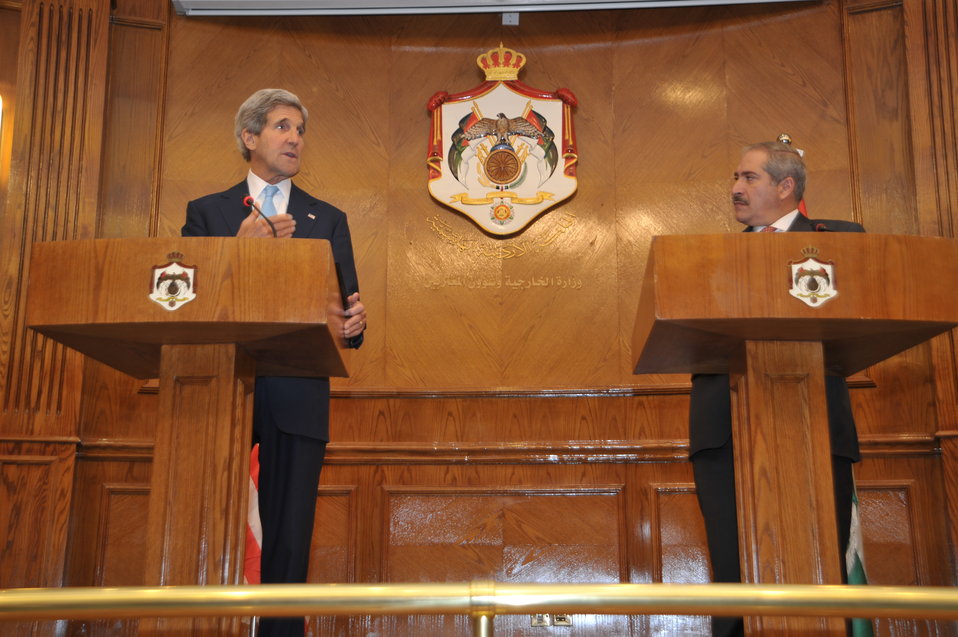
Secretary Kerry, Jordanian Foreign Minister Judeh Speak with Press

U.S. Secretary of State John Kerry speaks during a joint news conference with Jordanian Foreign Minister Nasser Judeh in Amman on July 17, 2013.